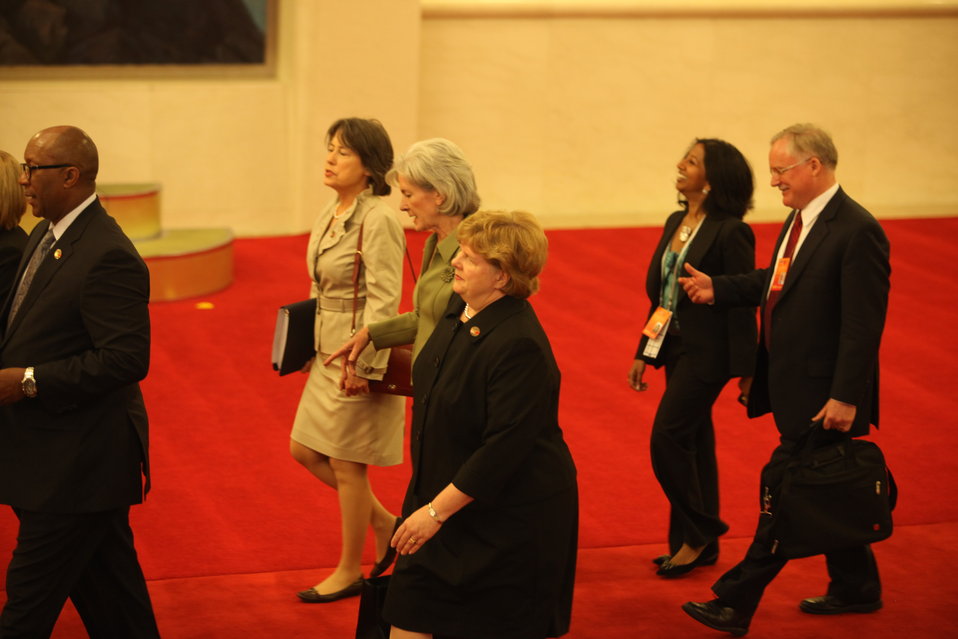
SandED 5/25/10

FDIC Chairman Sheila Bair, HHS Secretary Kathleen Sebelius, and Chair of the White House Council of Economic Advisors Christina Romer arriving at the Great Hall of the People for the opening session of the S&ED in Beijing